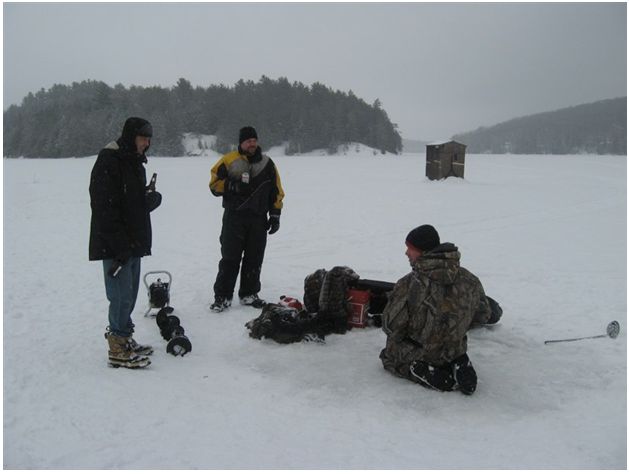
People ice fishing on the frozen surface of what is called the 'North Bay' of Ontario's Paudash Lake.